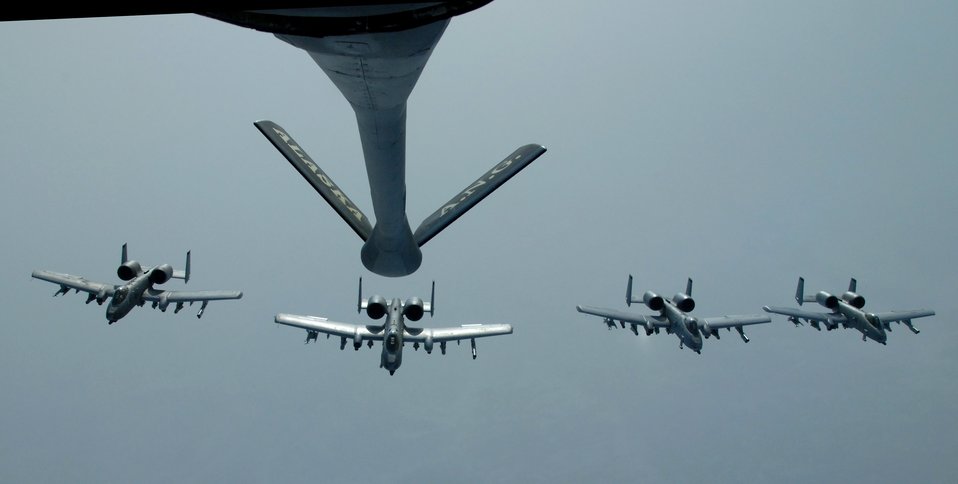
Arctic refueling

Four A-10 Thunderbolt IIs fly in formation behind a KC-135 Stratotanker April 4 over the Pacific Alaska Range Complex. Nearly all internal fuel, approximately 200,000 pounds, can be pumped through the flying boom, the KC-135's primary fuel transfer method. The A-10s are from the 355th Fighter Squadron, and the KC-135 is from the 168th Air Refueling Squadron, all from Eielson Air Force Base, Alaska.